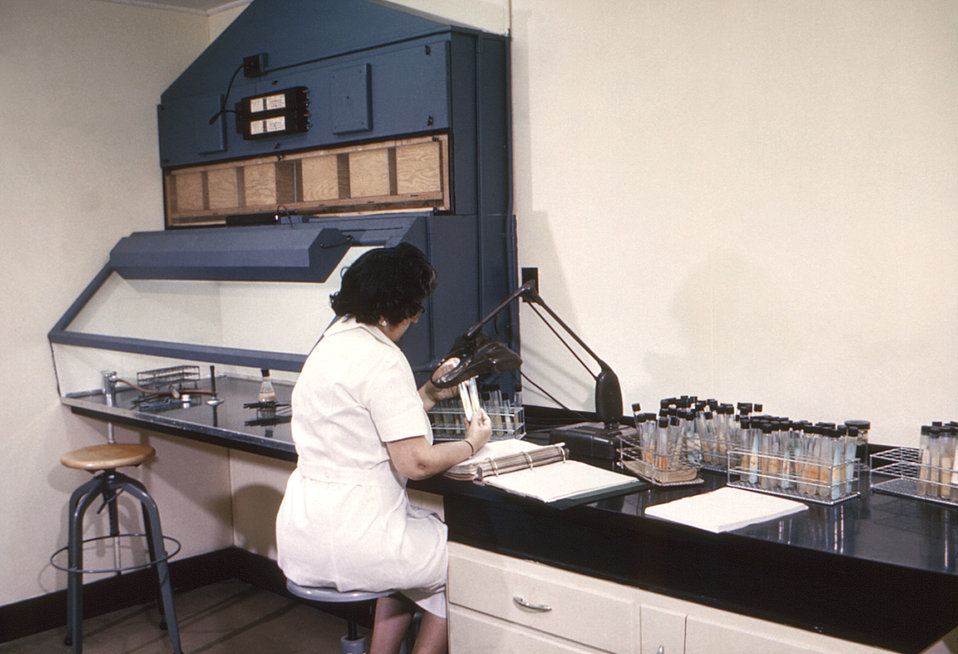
This historic 1962 photograph depicted a technician as she was seated in her mycobacterial laboratory, examining an unknown mycobacterial culture.